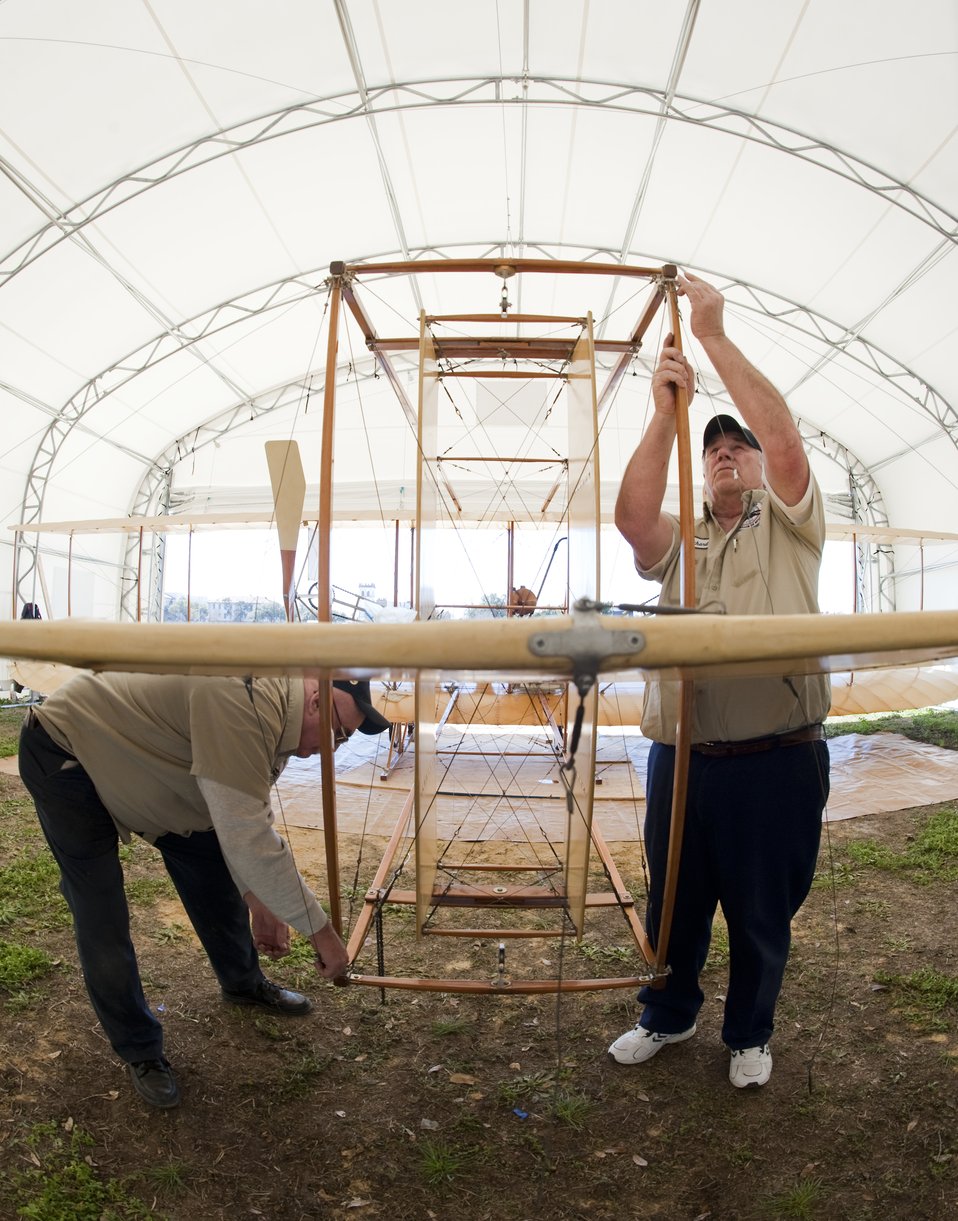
Wright

John Kennedy (left) and Richard Holt (right) work high and low to reattach a horizontal stabilizer cables to a Wright